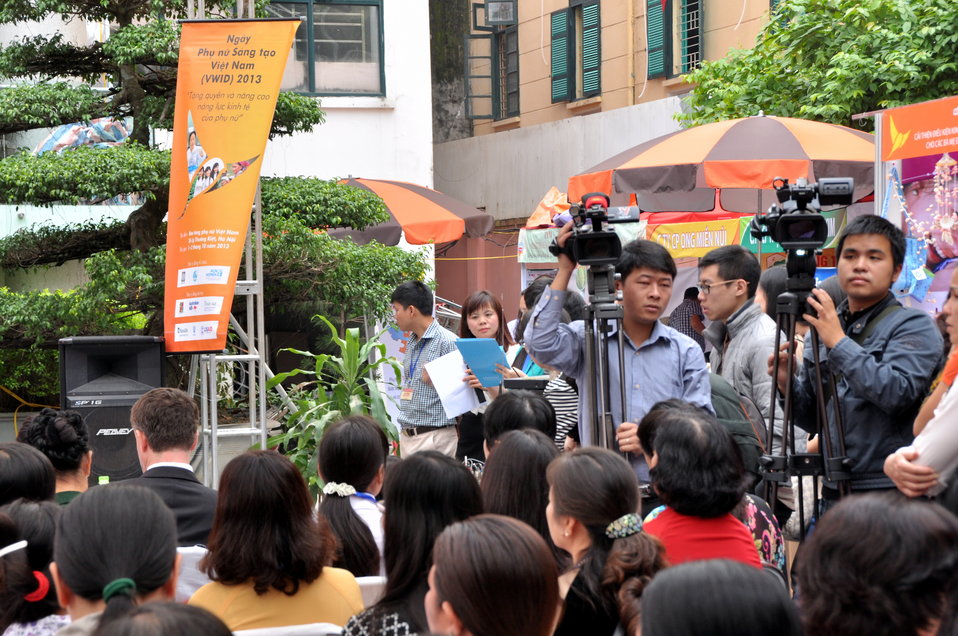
Vietnam Women Innovation Day 2013

Hanoi, October 1, 2013.